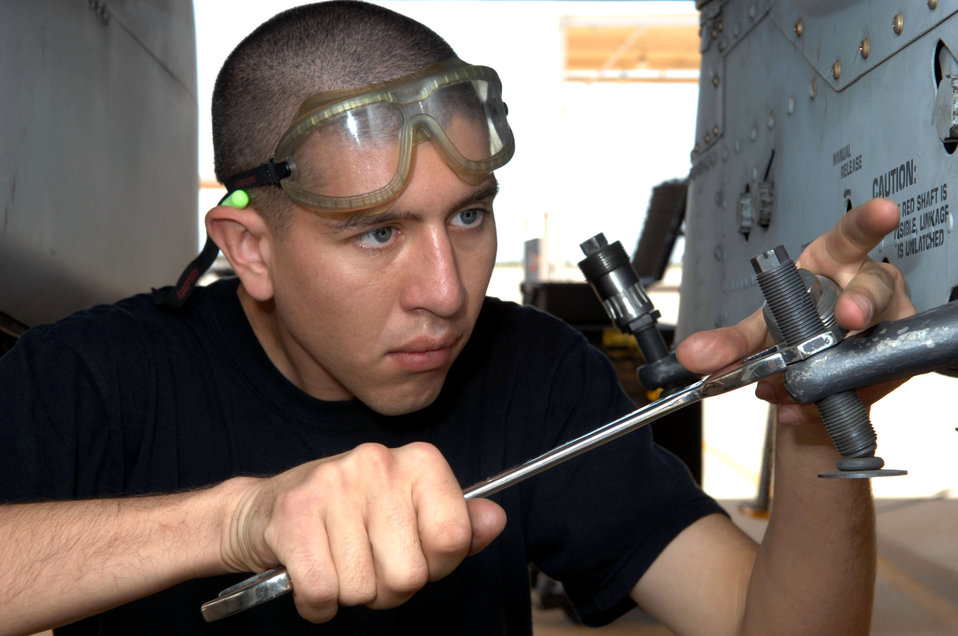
Load crew competition

Airman 1st Class Brandon Hacknet prepares the rocker arms on an A-10 Thunderbolt II during the quarterly load crew competition July 20 at Davis-Monthan Air Force Base, Ariz. The event is used to boost group morale while enhancing warfighting skills. Airman Hacknet is assigned to the 357th Aircraft Maintenance Unit.